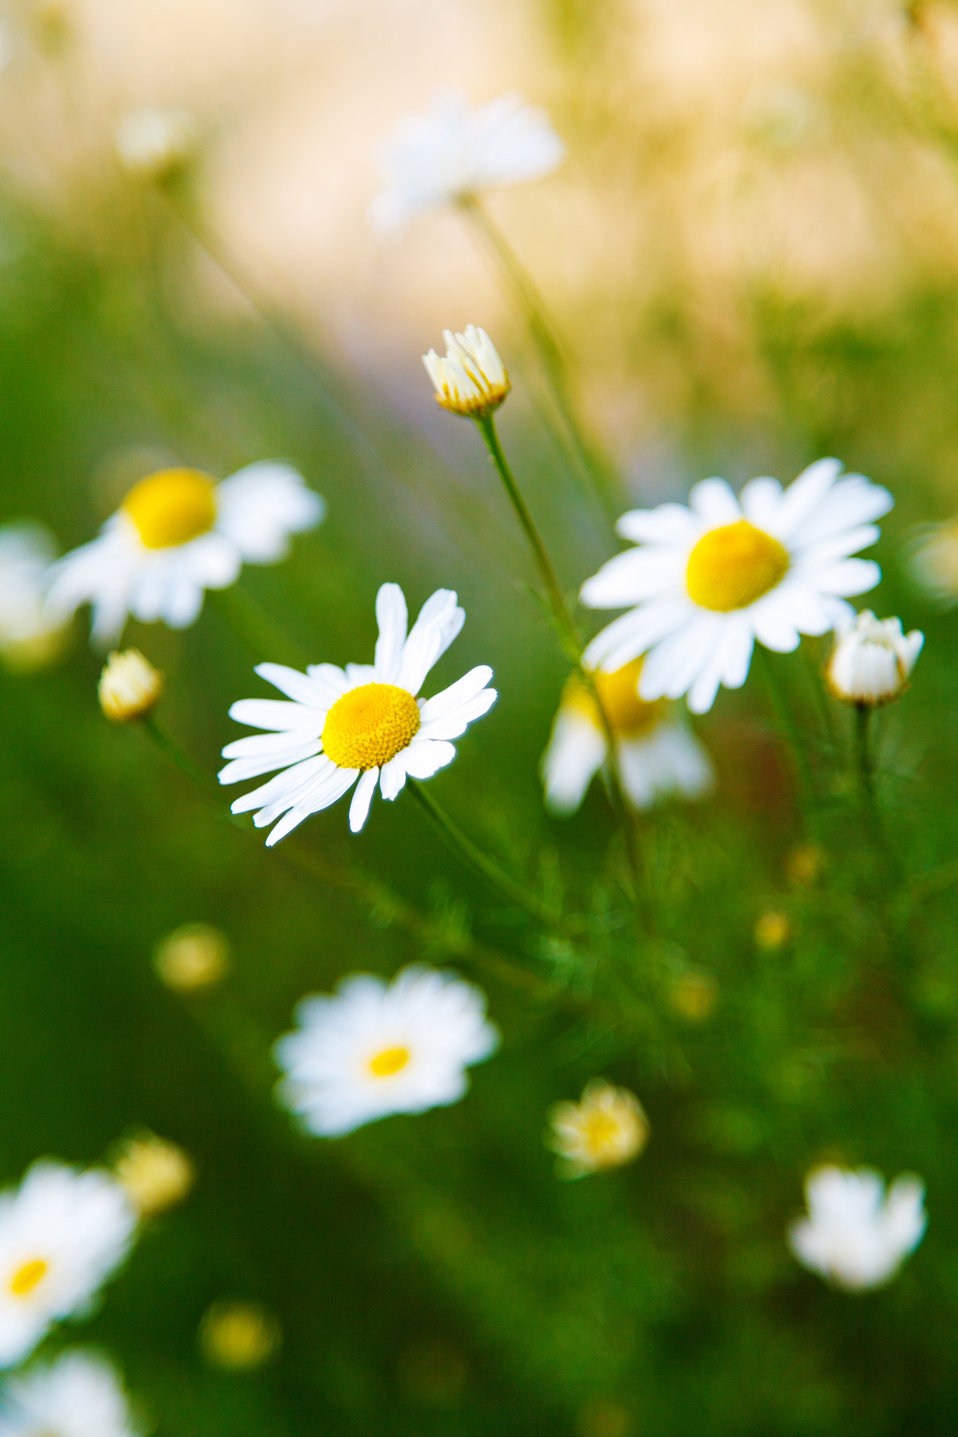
Chamomile flowers on a meadow.